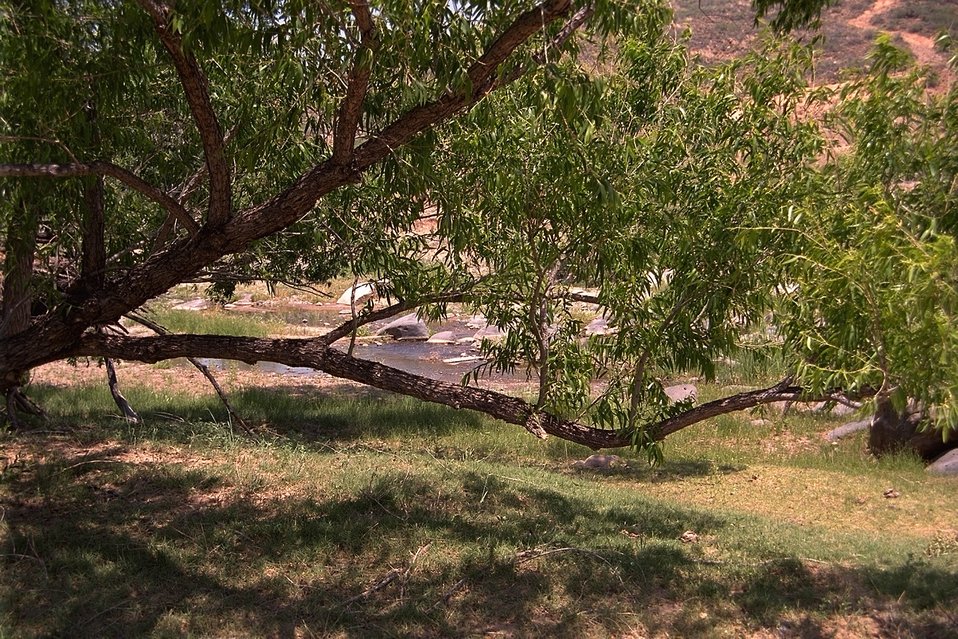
A large, healthy tree with the Agua Fria River in thebackground.